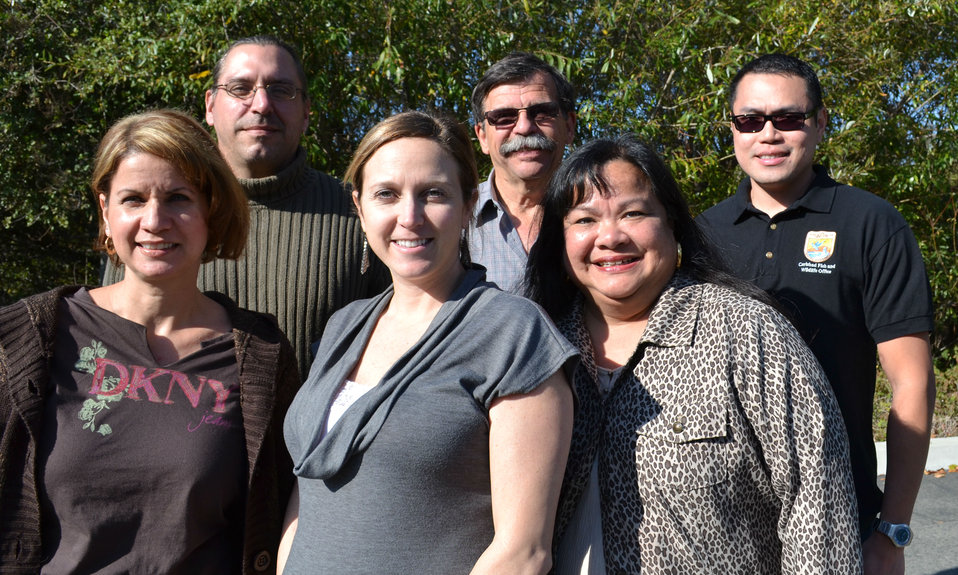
Carlsbad FWO Veterans: From left to right: Cathy Gutierrez, Office Assistant, U.S. Navy 1985-1990; Pat Gower, Fish and Wildlife Biologist, U.S. Army, served in the Persian Gulf in 1991; Jaime Hotz, Executive Secretary, U.S. Navy ; Dr. Gary Wallace, Botanist, U.S. Army 1969-1970, served in Vietnam and earned the Bronze Star; Emily Reed, Budget Technician, U.S. Air Force 1982-1992, Reserves 1993-2005, retired 2005; Favelino 'Beng' Go, IT Specialist, U.S. Air Force 1993-1998. Not pictured: Wayne Nuckols, Technical Information Specialist, U.S. Army 1983-1989 and Larry Lee, Supervisory General Services Assistant, U.S. Army 1992-1996 .